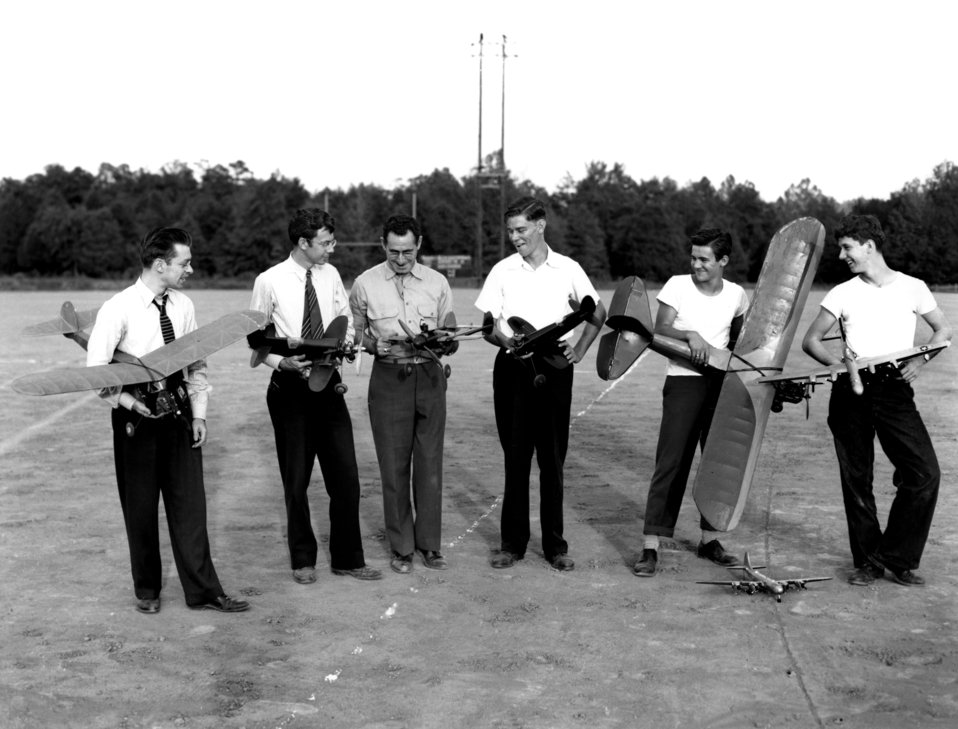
Model Airplane Club Oak Ridge 1945

1106 DOE photo Ed Westcott 9-1945 Oak Ridge Tennessee